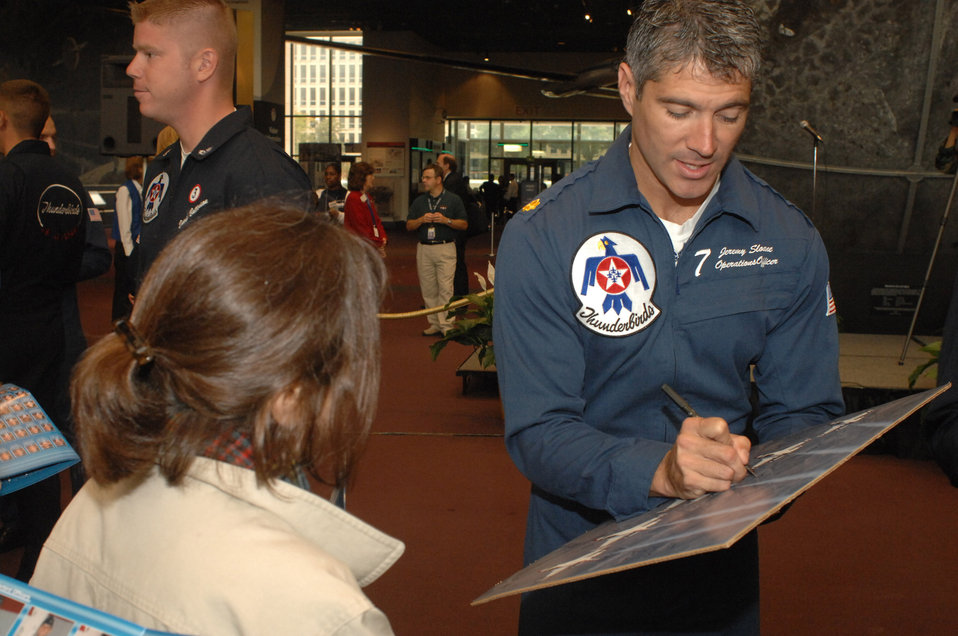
Thunderbirds visit Smithsonian Air and Space Museum

Maj. Jeremy Sloane signs a poster for a fan at the Smithsonian Air and Space Museum Oct. 11 in Washington, D.C. Major Sloane is the Thunderbirds operations officer and was at the Smithsonian as part of a week-long series of events that will culminate with the opening of the Air Force Memorial Oct. 14.